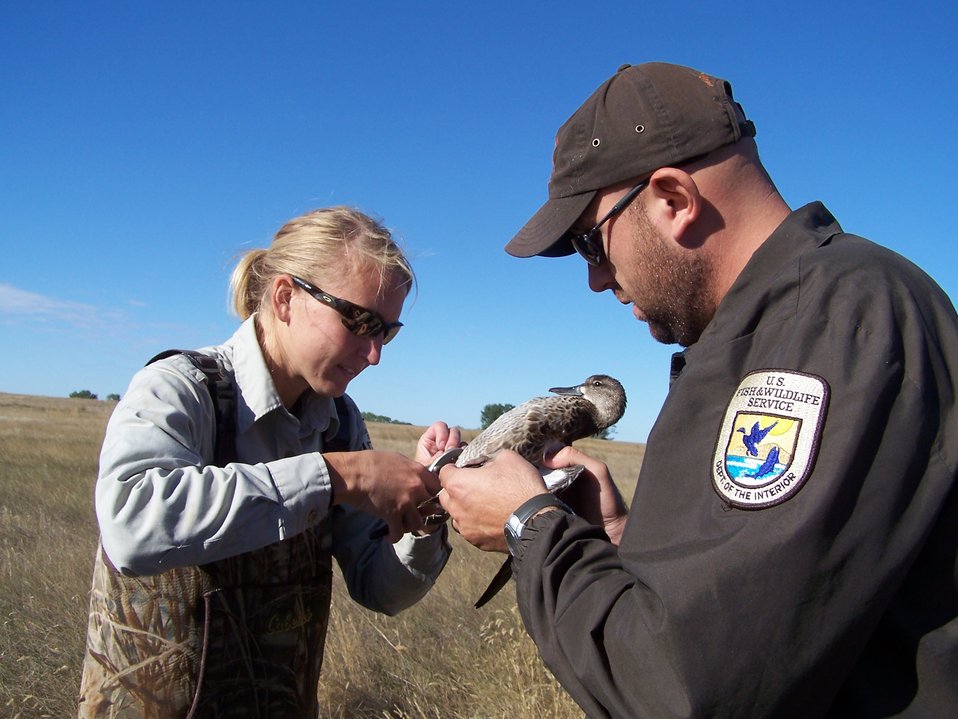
Bird Banding at Bowdoin NWR

Refuge staff band a blue-winged teal at Bowdoin NWR.